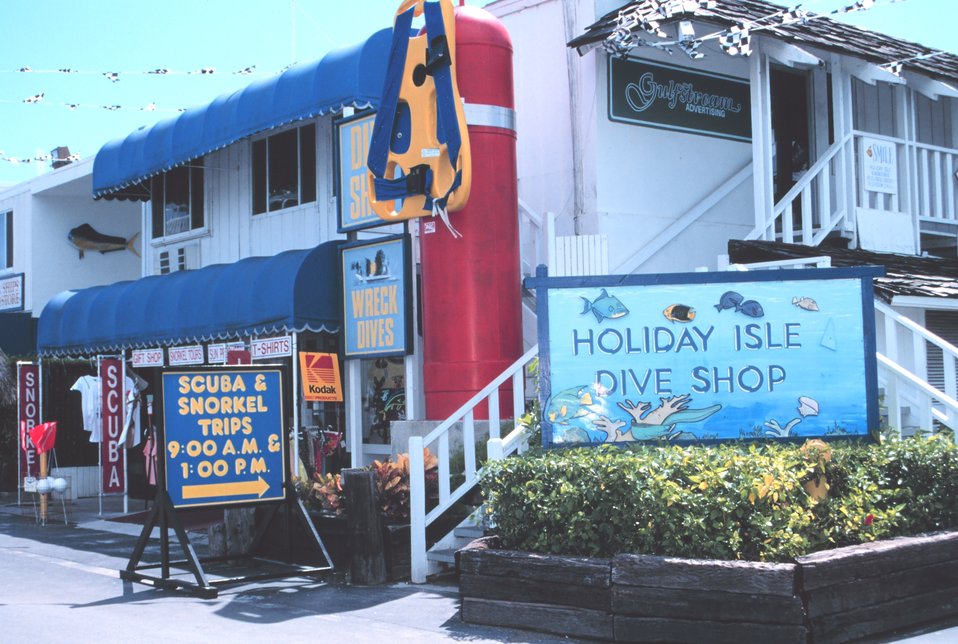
A colorful dive shop